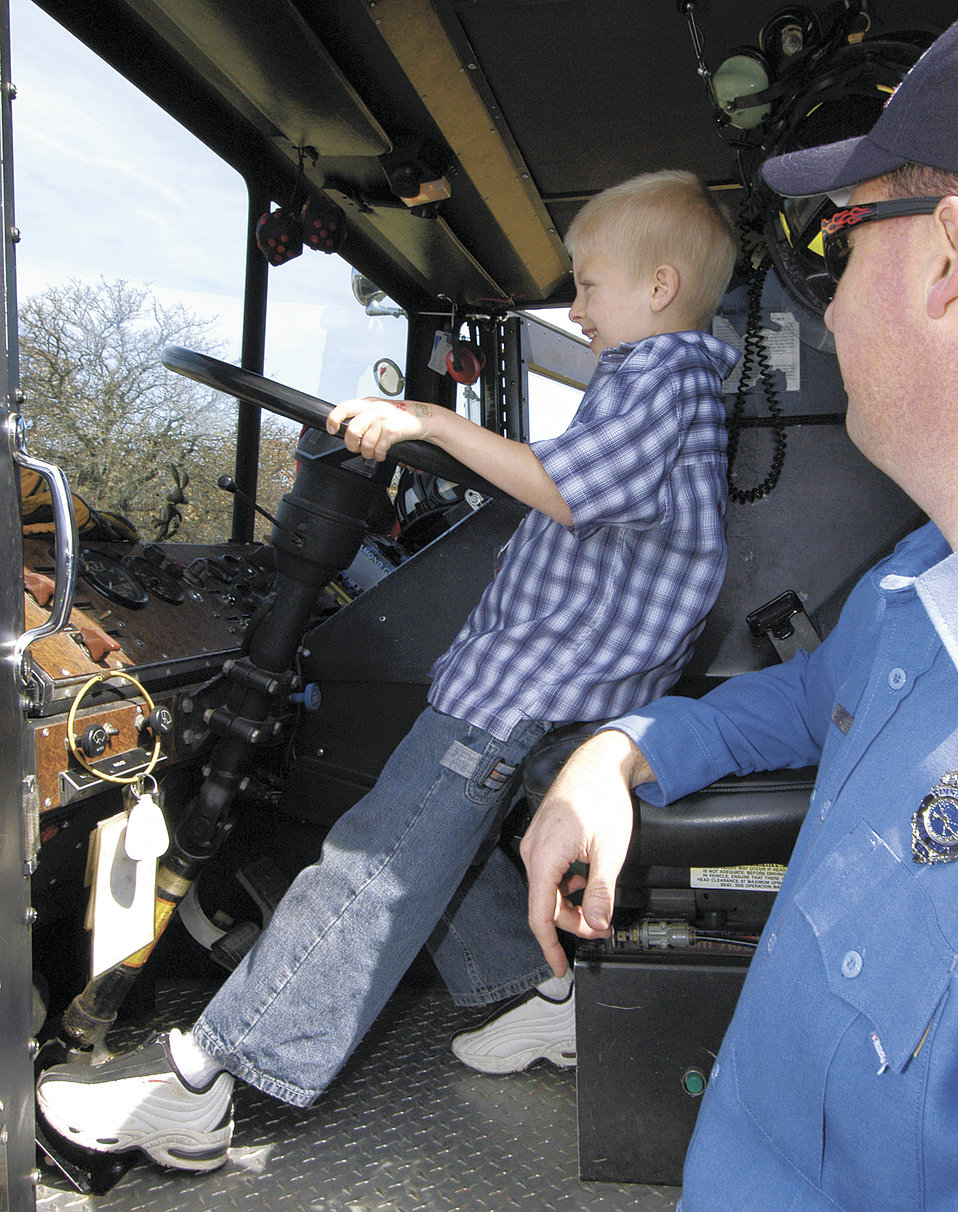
Through the eyes of a child

TINKER AIR FORCE BASE, Okla. -- Ben Cuzzort, 9, stretches to reach the floor horn of a fire truck during a Bring a Child to Tinker event. Firefighter David Langford watches the pint-sized firefighter behind the wheel. The event gave employees a chance to show the children their work world through displays, videos and demonstrations.